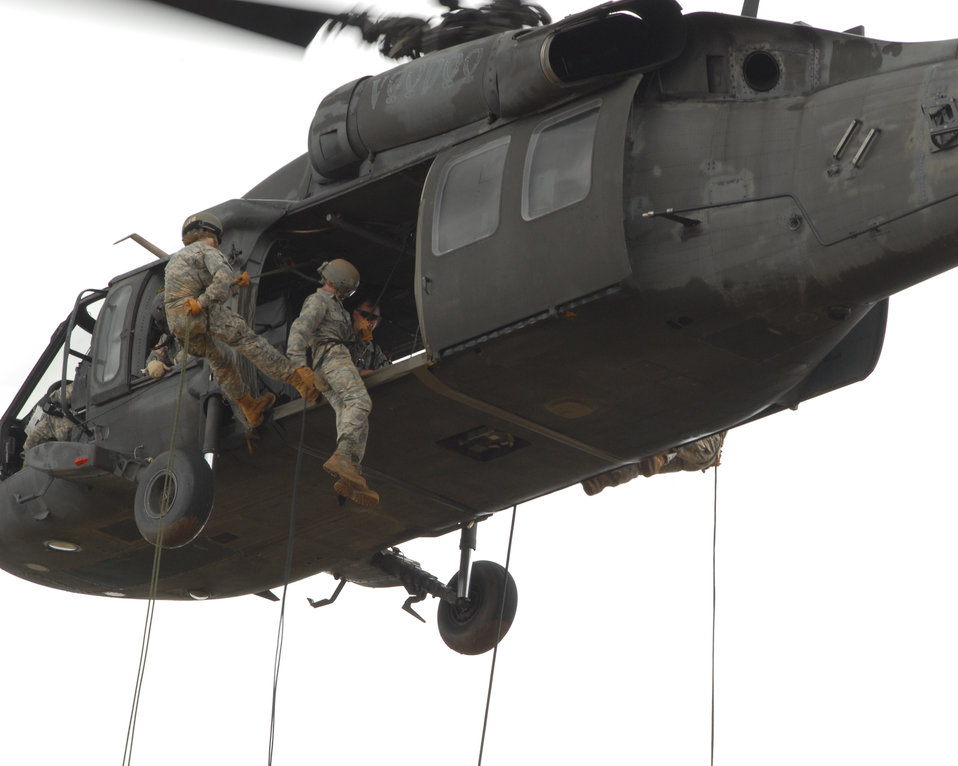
Airmen graduate Air Assault Course with Soldiers

Senior Airman Jordan Miller rappels out of a UH-60 Blackhawk May 10, 2011, in Wahiawa, Hawaii. He and four other 647th Security Forces Squadron Airmen were chosen to participate with 309 Soldiers in an 11-day Army Air Assault course April 30 to May 11, 2011.